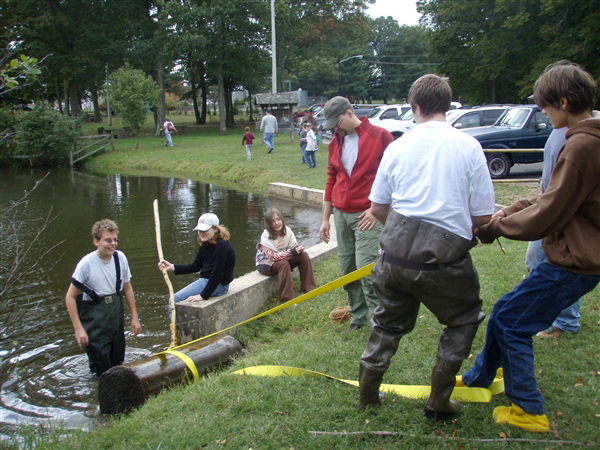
National Public Lands Day

Volunteers clean up a pond and add native plants as part of National Public Lands Day Sept. 25, 2009, at Fort Dix, N.J.